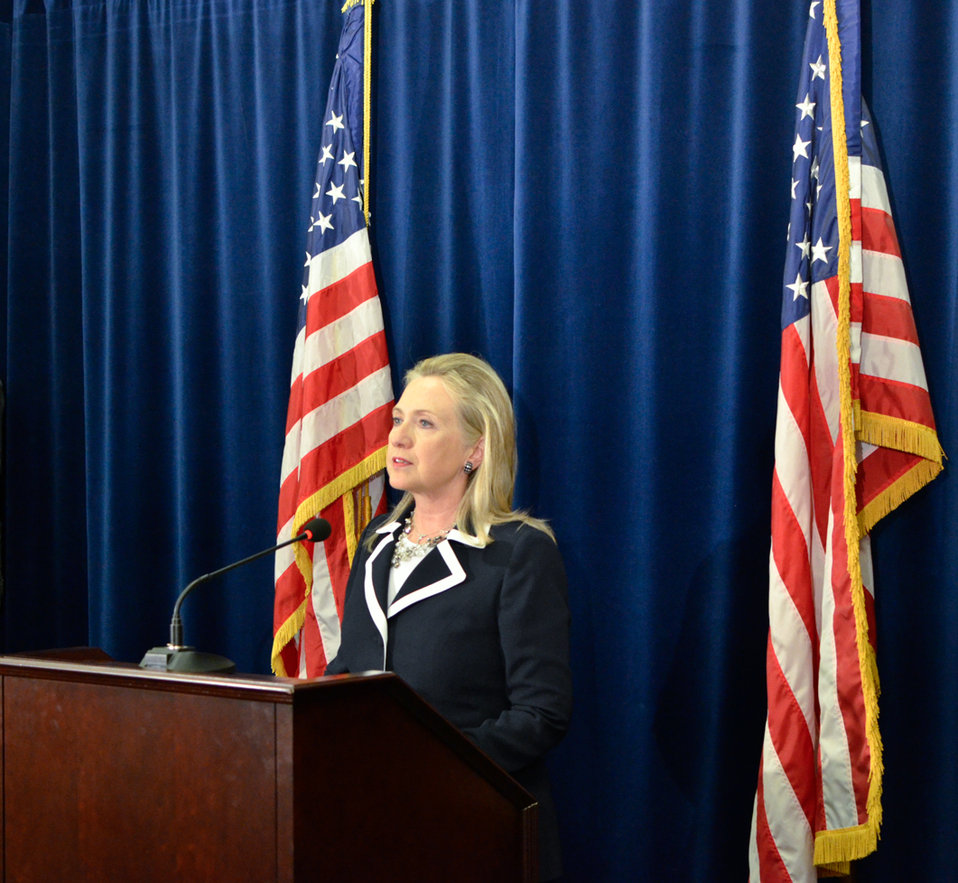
Secretary Clinton Addresses Reporters

U.S. Secretary of State Hillary Rodham Clinton addresses the media at a press conference after her meetings during the Asia-Pacific Economic Cooperation (APEC) Leaders' Week in Vladivostok, Russia, September 9, 2012.